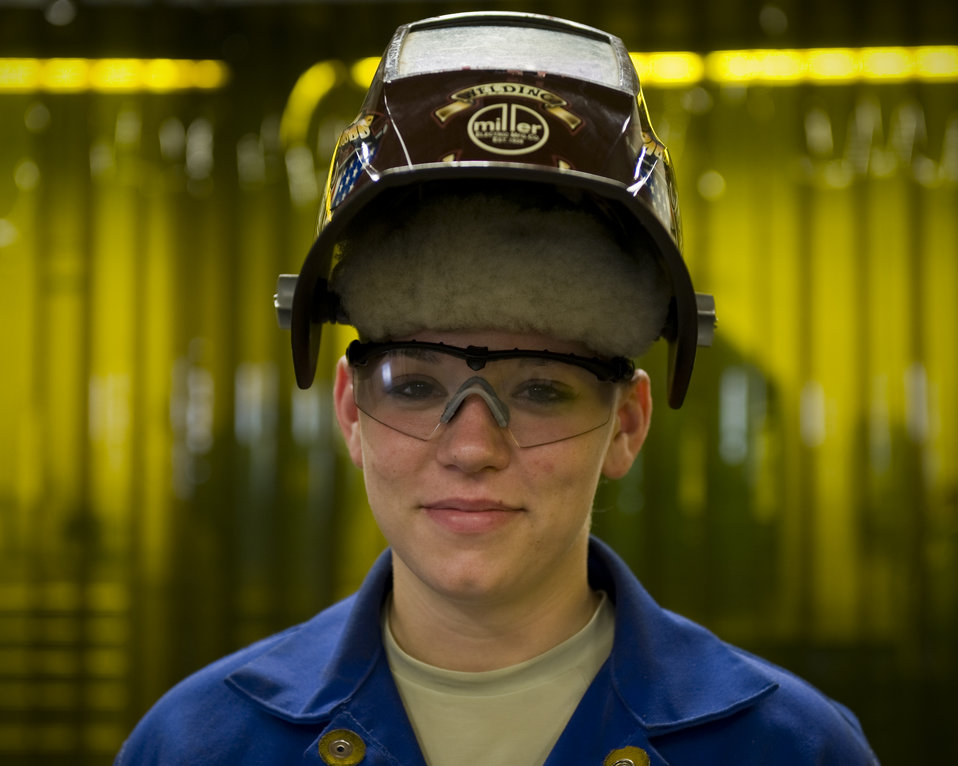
Heavy Metal Airman

Airman 1st Class Brooke Goose poses for a photo Aug. 24, 2012, at Dyess Air Force Base, Texas. Goosen is the only female out of 28 Airmen in the 7th Equipment Maintenance Squadron Dyess metal shop and has more than seven years experience with welding.